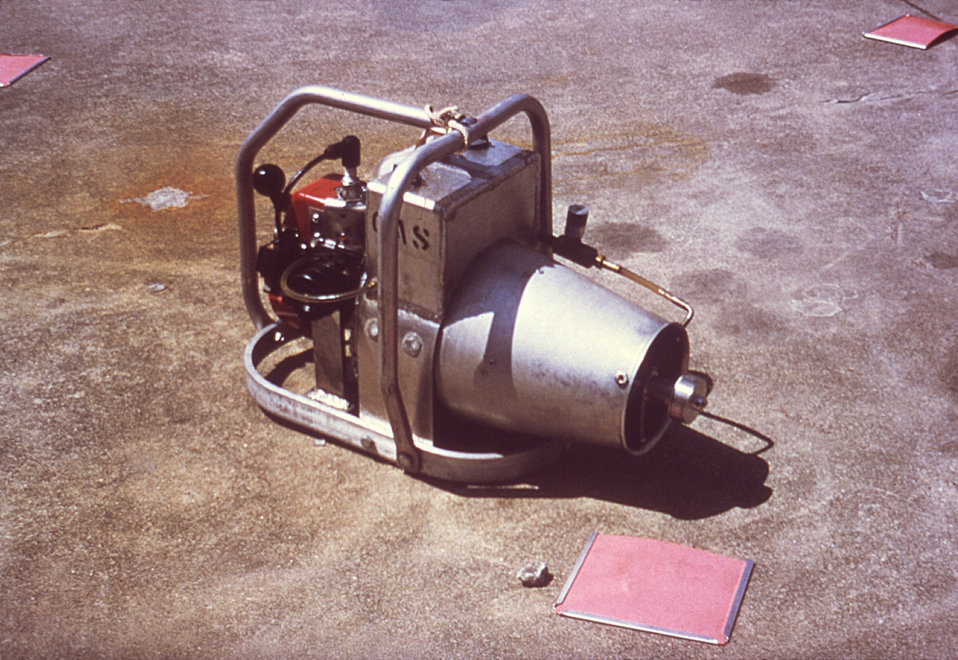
Called 'Mighty Mo', this 1981 photograph depicts the ultra-low volume (ULV) hand-held fog generator used to control population of potential mosquito disease vectors by disseminating an insecticide fog into their habitats.